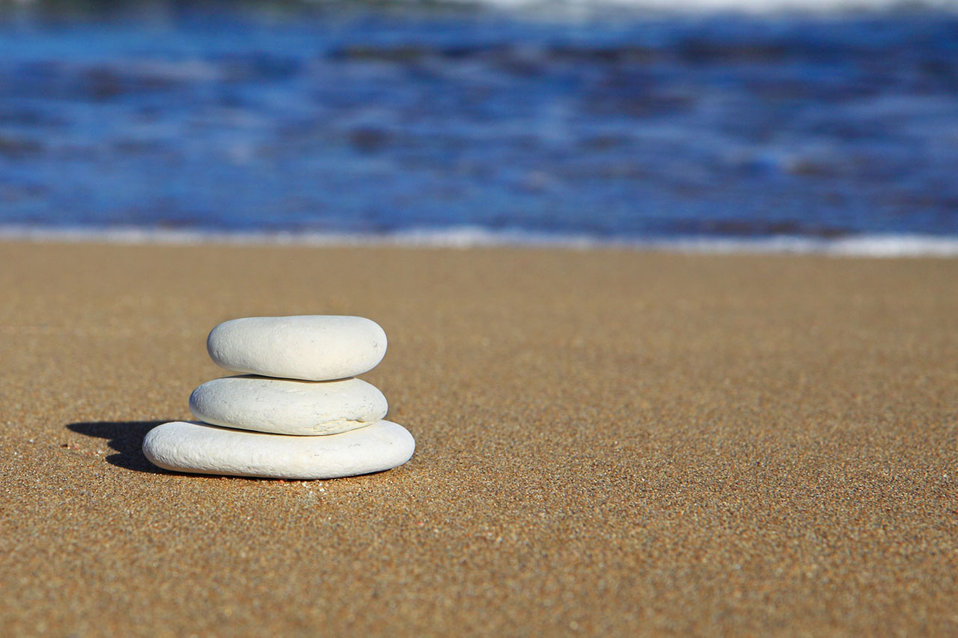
Pebbles on beach

Pebbles in sand with ocean in background.